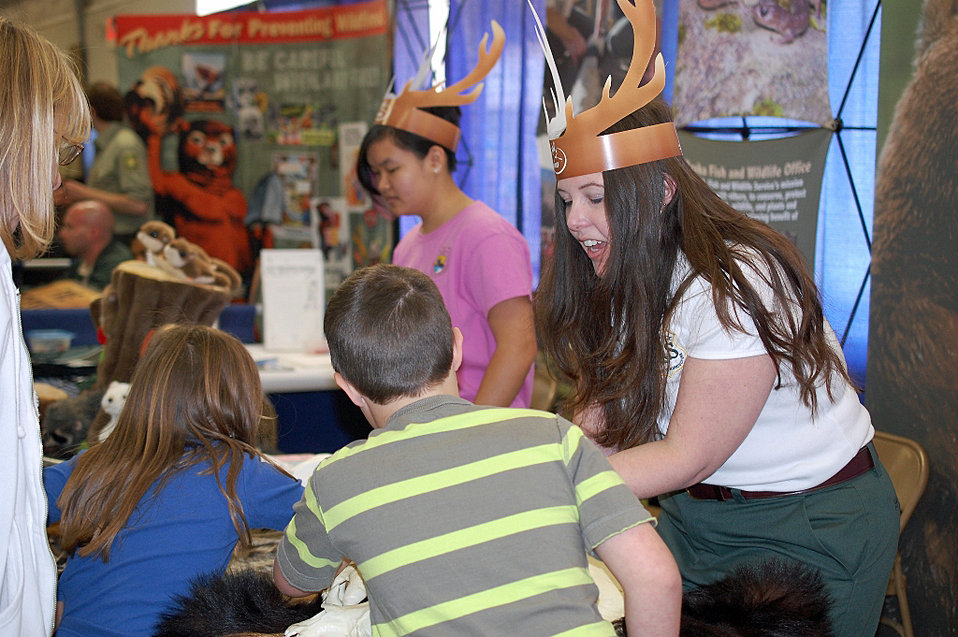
Youth learn about the characteristics of various wildlife species from U.S. Department of Agriculture (USDA) Forest Service acting Public Affairs Officer Jennifer Velez at the annual Siskiyou County Sportsmen’s Expo in Yreka, CA on Mar. 15, 2013. The booth featured hands-on activities for children including skins, skulls, tracks and scat of local mammals, as well as interpretive handouts about habitat and species management.US Forest Service photo by Sam Cuenca.